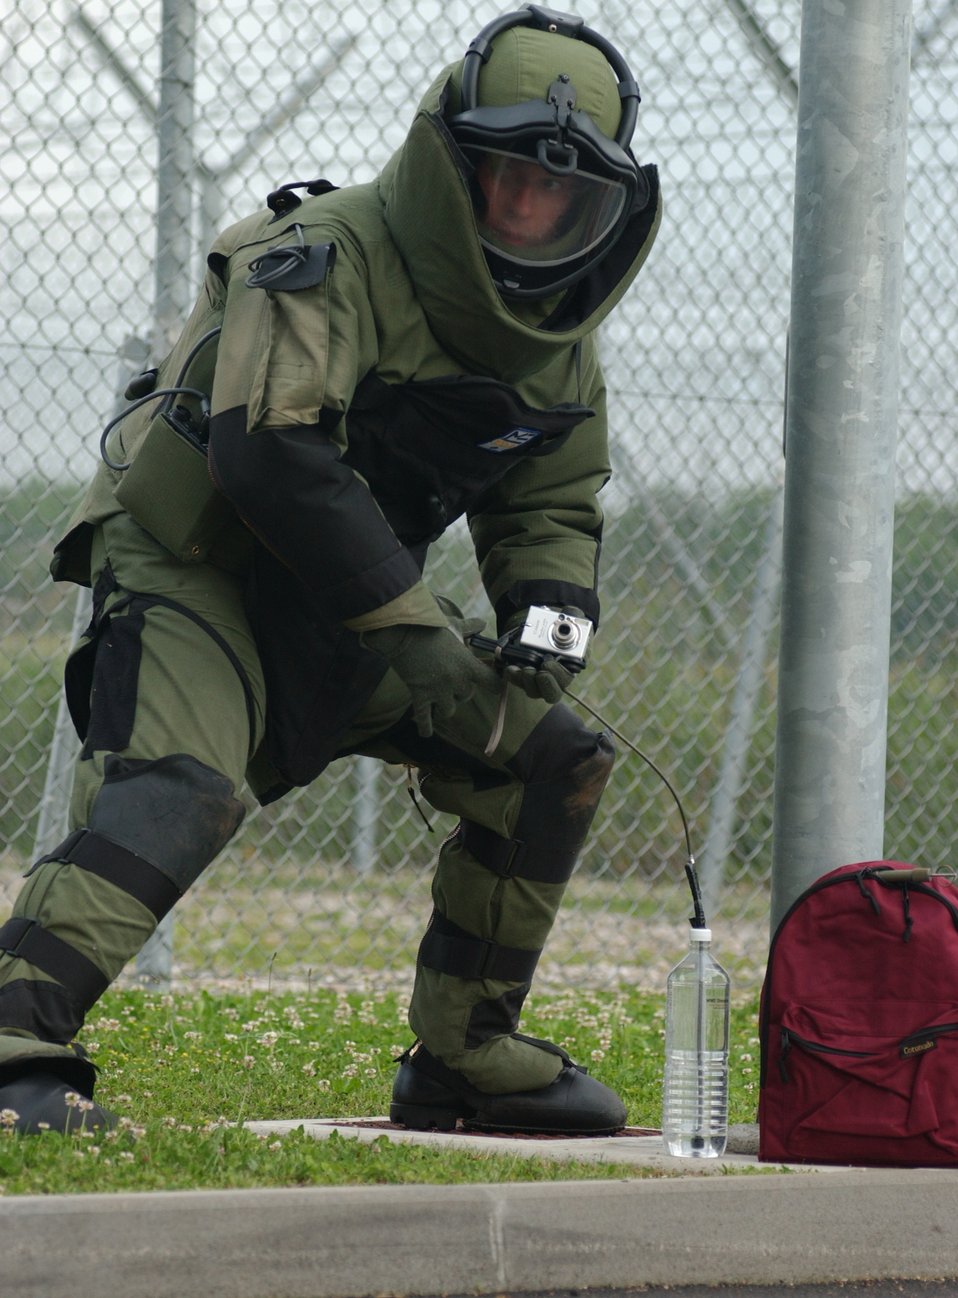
Heavy-duty gear

Staff Sgt. Justin Surran analyzes a suspicious package at Aviano Air Base, Italy, on Tuesday, June 6, 2006, during a Local Salty Nation training exercise. The heavy-duty Kevlar suit weighs 70 pounds and is used to protect explosive ordnance disposal troops. Sergeant Surran is assigned to the 31st Civil Engineer Squadron.